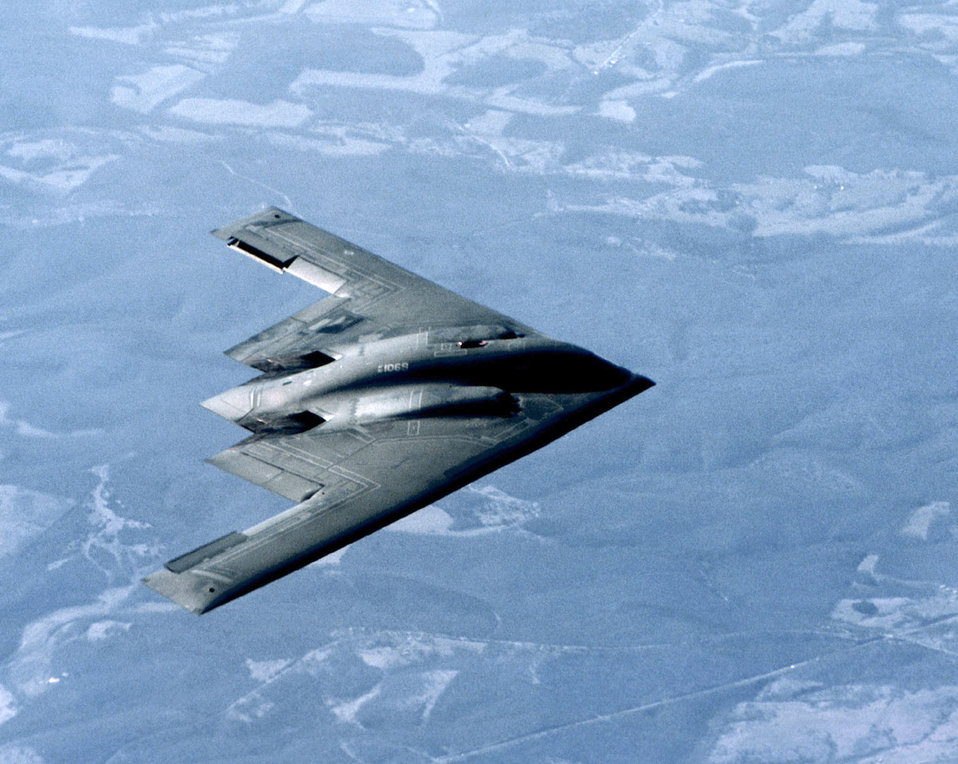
Spirit in the sky

FILE PHOTO -- A B-2 Spirit bomber approaches a KC-10A Extender from McGuire Air Force Base, N.J., during a training exercise on March 23, 2001. The B-2 Spirit is a multi-role bomber capable of delivering both conventional and nuclear munitions.